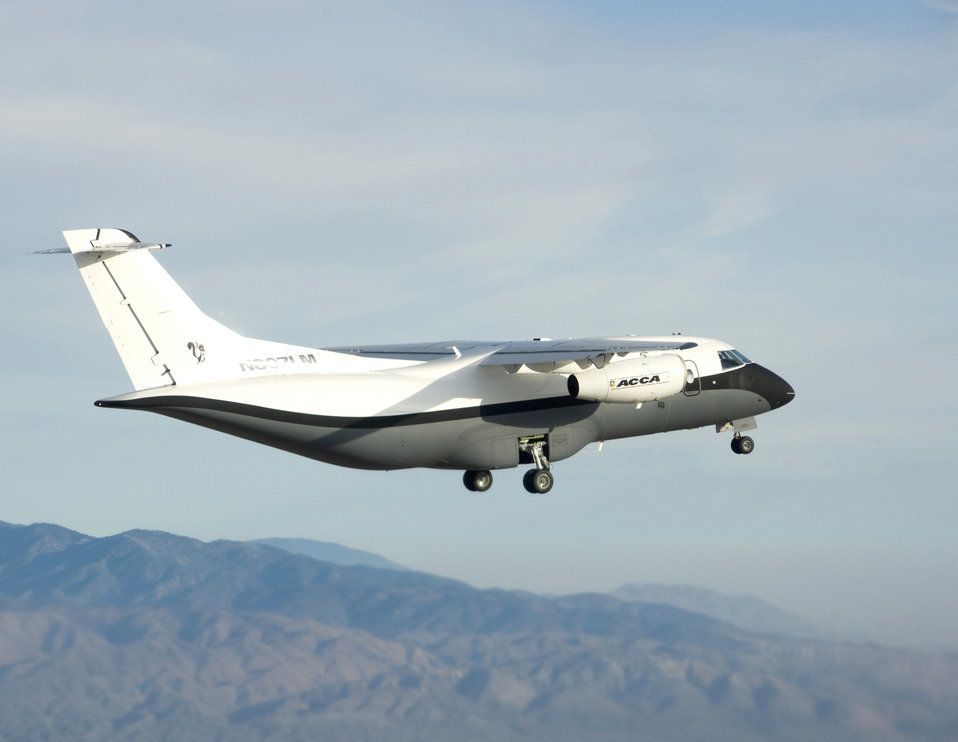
Maiden voyage

The Advanced Composite Cargo Aircraft makes its first test flight from Air Force Plant 42 June 2 in Palmdale, Calif. The ACCA is proof of concept technology demonstrator for advanced composite manufacturing processes in a full-scale, certified aircraft. It was developed by officials from the Air Force Research Laboratory and Lockheed Martin.